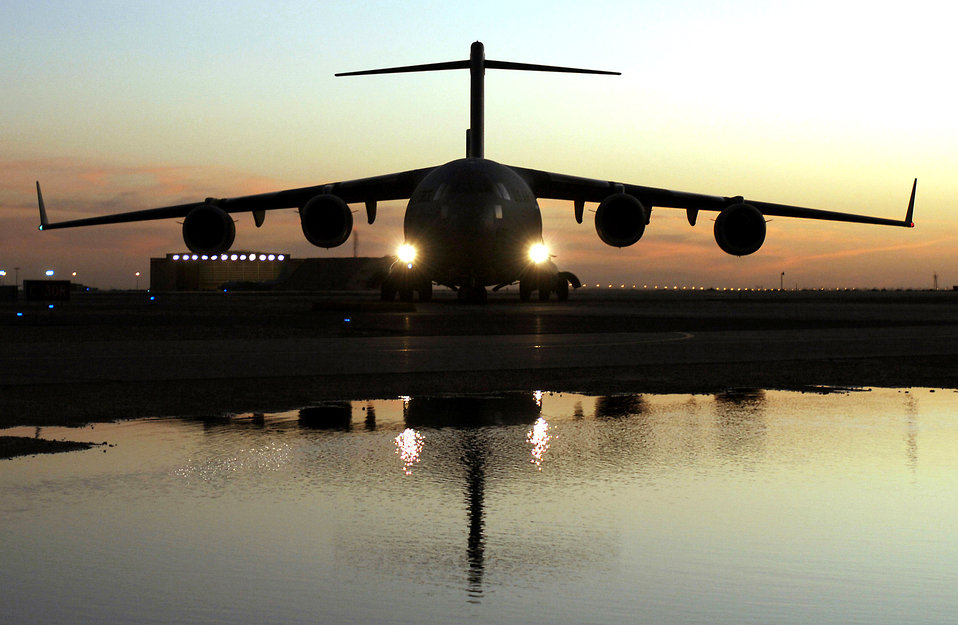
March 4 airpower summary: C-17s help sustain operations

Crewmembers aboard a C-17 Globemaster III aircraft prepare to offload wounded personnel from Balad Air Base, Iraq, at an undisclosed location in Southwest Asia.